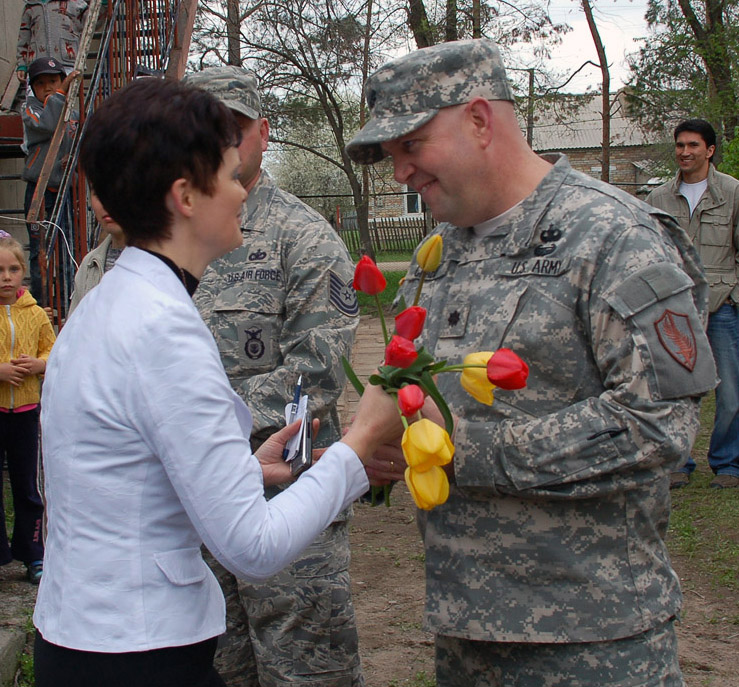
School renovation project builds bond between U.S., Kyrgyz Republic

During a ground-breaking ceremony held April 14 for a renovation project at Birdik Village School in Kyrgyzstan, Olga Voroshihina, the school's principal, gives freshly picked tulips to Lt. Col. Patrick Crabb, chief of the U.S. Embassy's Office of Military Cooperation. The